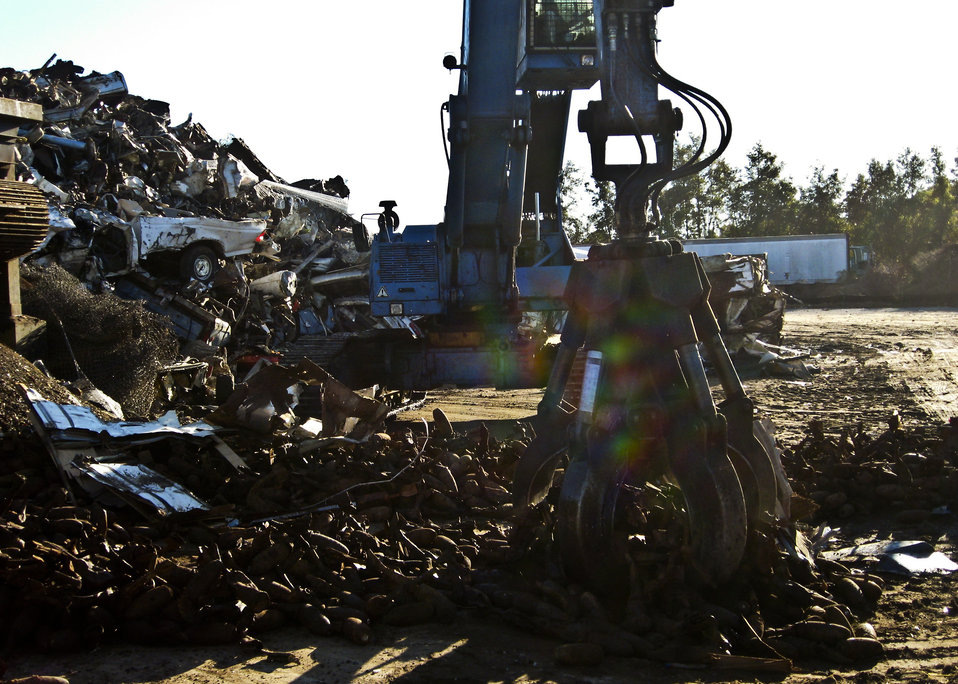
Recycling saves money

A large mechanical claw at a commercial shredding facility near Eglin Air Force Base, Fla., grabs a load of discarded miniature practice bombs that will be fed into a shredder. The shredded material then will be recycled. To date, more than seven million pounds of range debris metal have been recycled, saving the government millions of dollars.